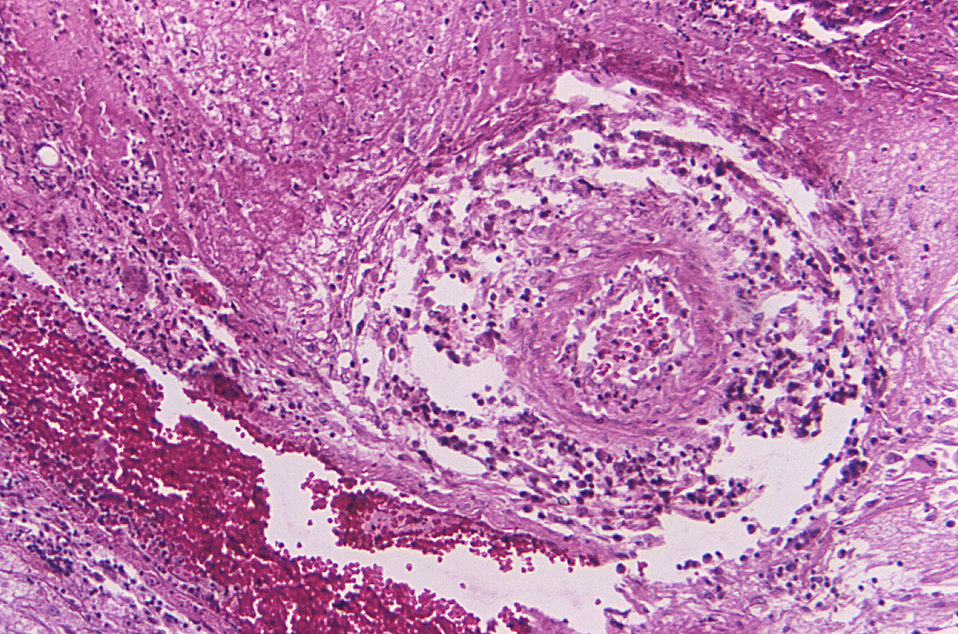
Under a relatively-low magnification of 125X, this photomicrograph of a brain tissue sample revealed some of the histopathologic changes associated with a tissue reation due to the presence of the fungus, Bipolaris hawaiiensis, formerly known as Drechslera hawaiiensis.